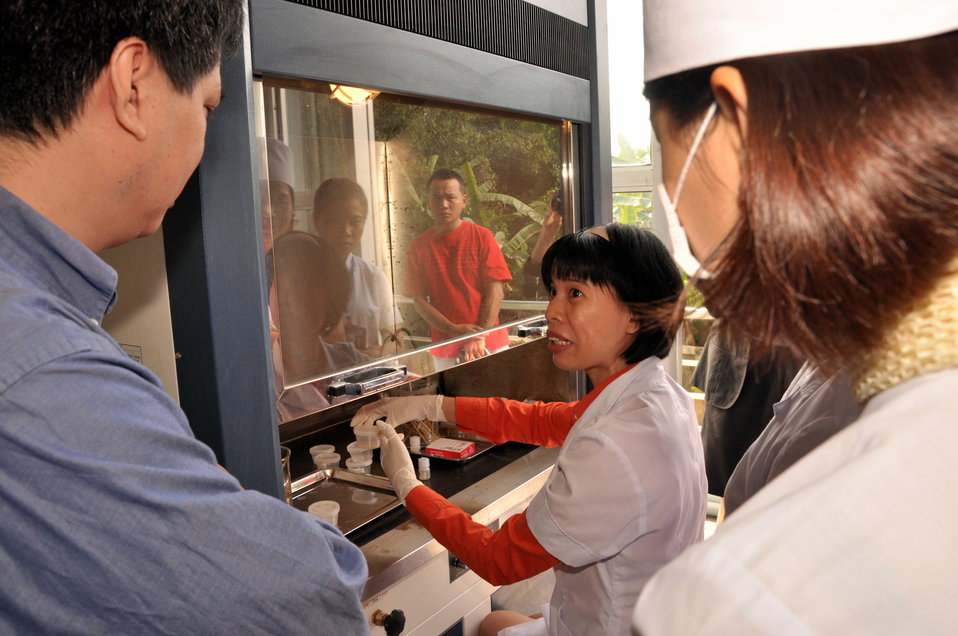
USAID supports new rapid detection TB equipment